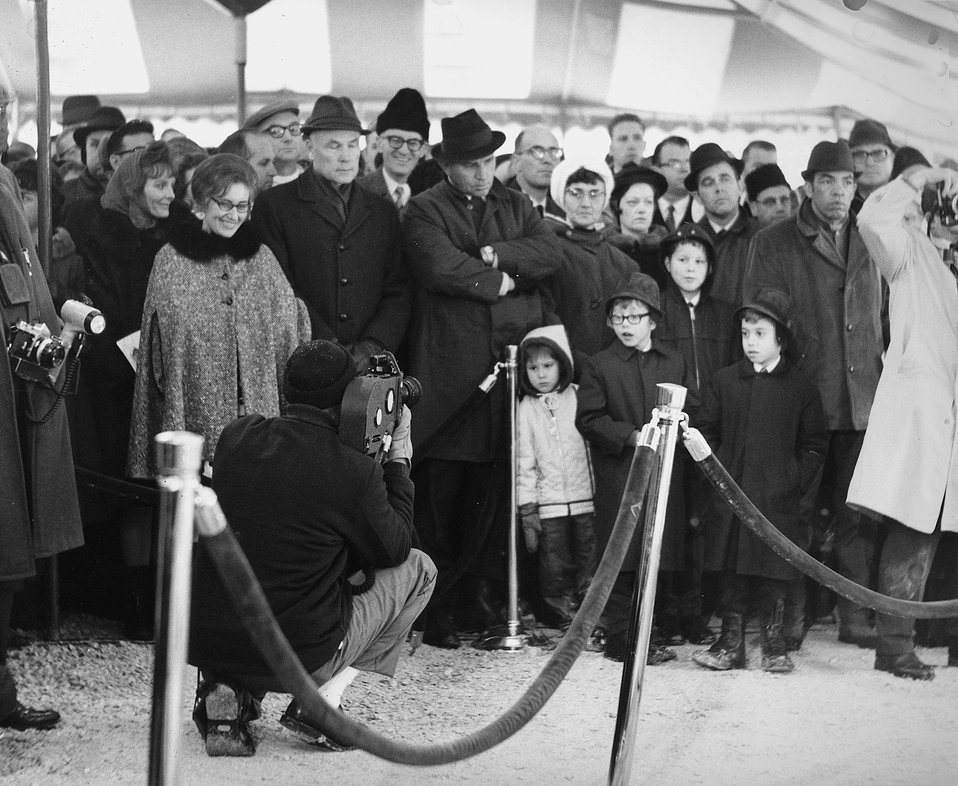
The crowd gathered around the plot of earth where the actual groundbreaking took place. 1968